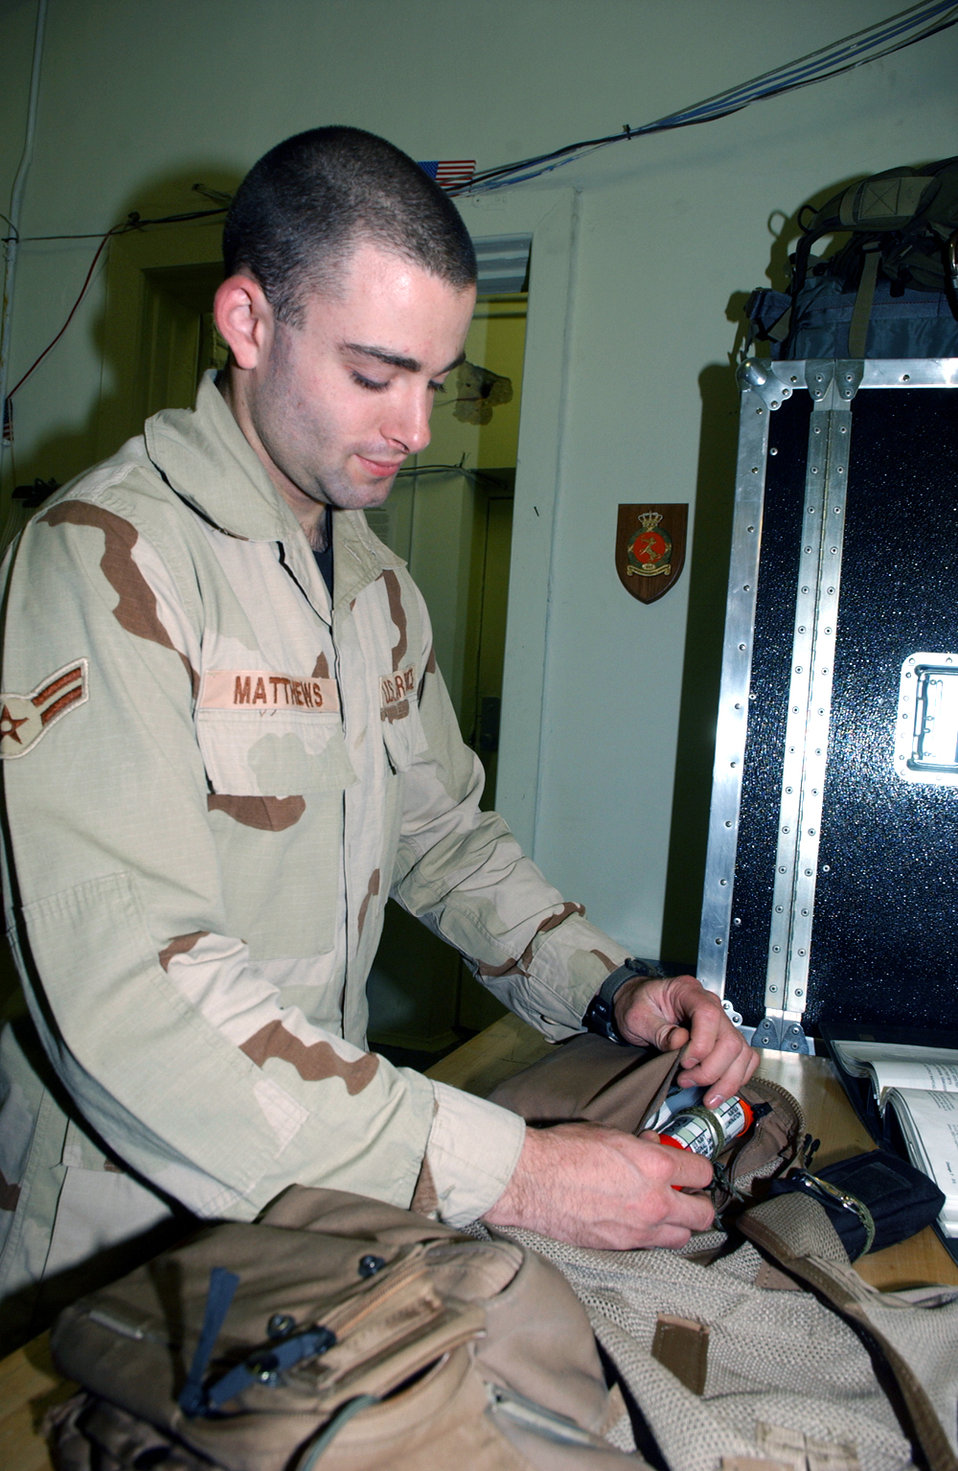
Life support

BAGRAM AIR BASE, Afghanistan -- Airman 1st Class Daniel Matthews packs a flare into an A-10 Thunderbolt II pilot's survival vest. The life-support specialists are responsible for ensuring more than 50 items are prepared each time a pilot heads to the plane. Airman Matthews is assigned to the 355th Expeditionary Fighter Squadron.